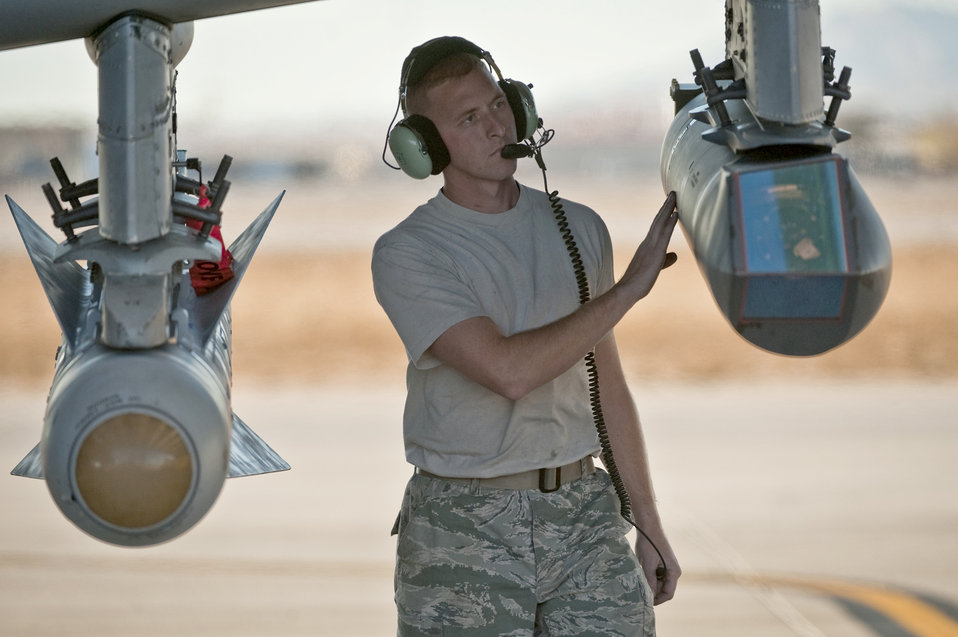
Green Flag West 11-2

Staff Sgt. Jamie Case looks over a targeting pod attached to an A-10 Thunderbolt II during the Green Flag West 11-2 exercise Dec. 6, 2010, at Nellis Air Force Base, Nev. Sergeant Case is with the 23rd Aircraft Maintenance Squadron at Moody AFB, Ga.